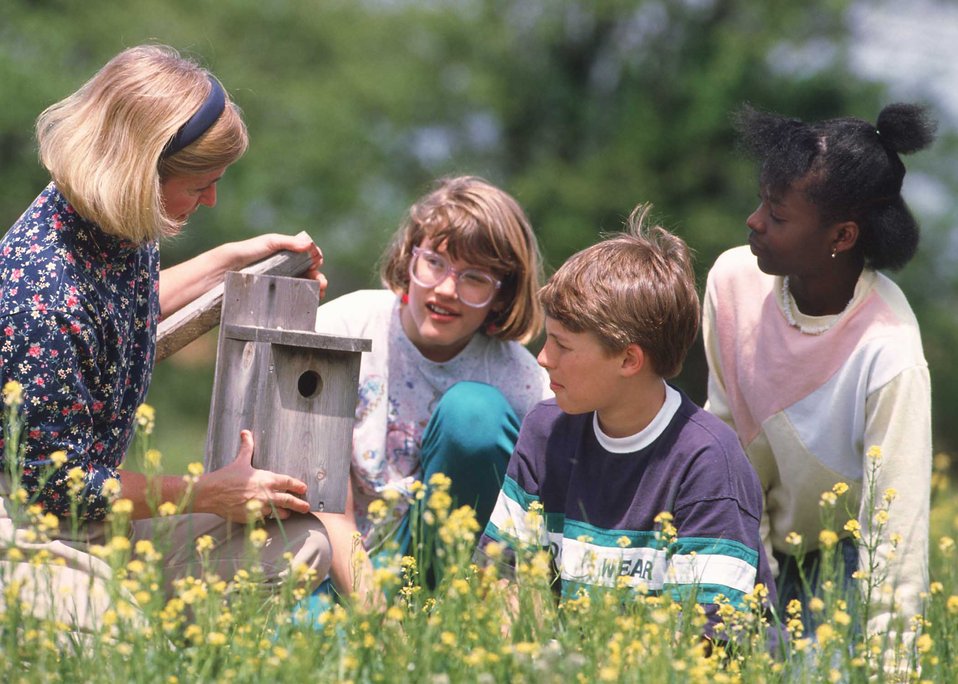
Students at Centreville Middle School learn about bird houses as part of an outdoor classroom being built on the school grounds.